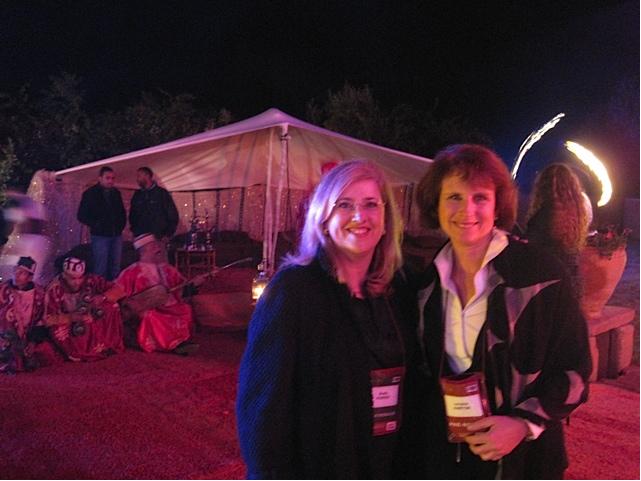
Special Representative Hariton and Porges Pose for a Photo

Special Representative for Commercial and Business Affairs (CBA) Lorraine Hariton and Shelly Porges of the Office of CBA pose for a photo during a dinner at the second U.S. – Maghreb Entrepreneurship Conference in Morocco, January 16-18, 2012. State Department photo/ Public Domain]